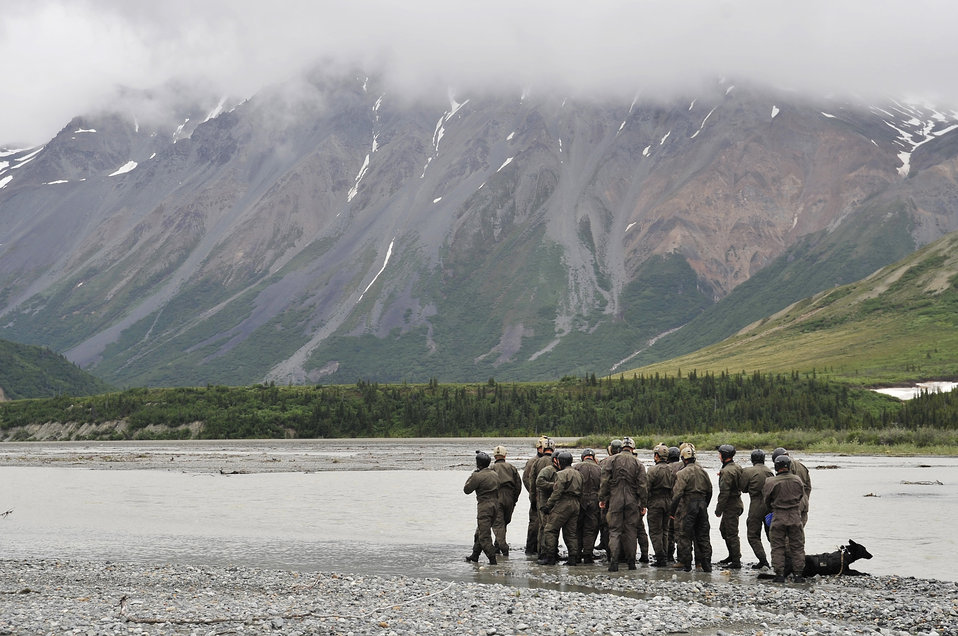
Navy SEALs train during Northern Edge 2009

A group of Navy SEALs prepare to cross Phelan Creek during Northern Edge 2009 June 17 at Fort Wainwright, Alaska. Northern Edge is a large-scale exercise hosted in Alaska to improve command, control and communications between the armed services. The Northern Warfare Training Center and the SEALs worked together on river crossing techniques and rope handling.